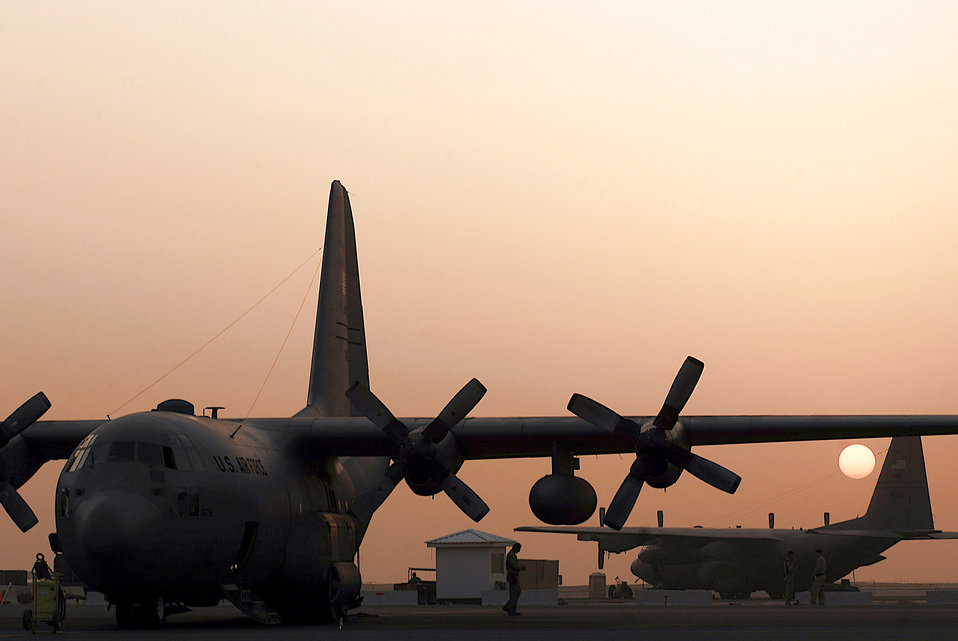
Sunset on the flightline

C-130 Hercules aircraft stand by for missions at an air base in Southwest Asia. These aircraft move coalition forces and equipment throughout the areas of responsibility in Iraq and Afghanistan.